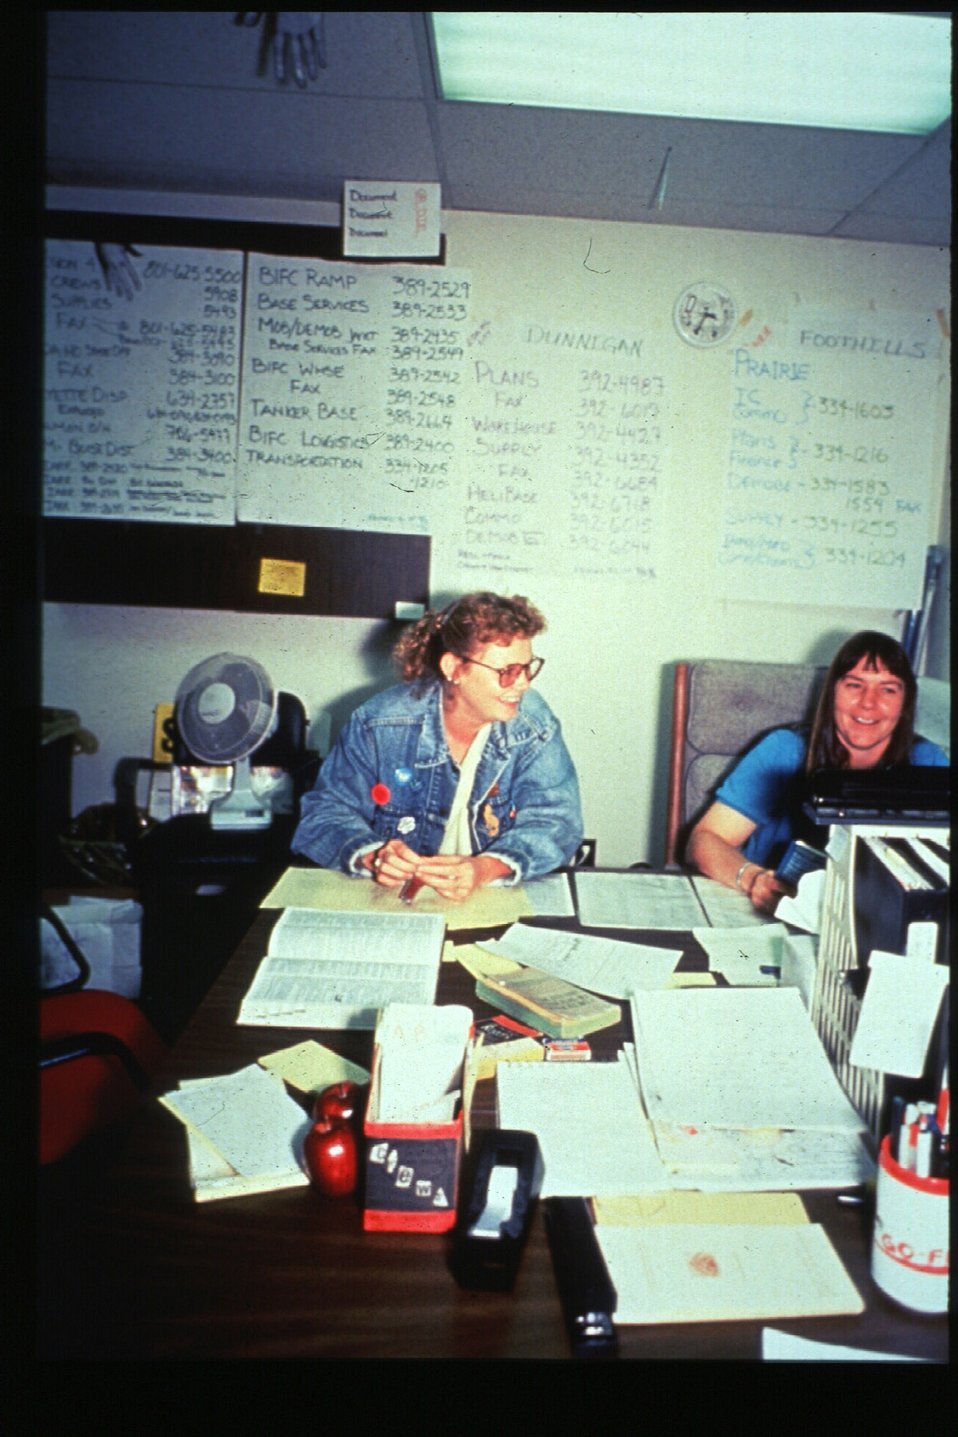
Boise Foothills Fire Danskin Mountains and South Fork of Boise River Office Four River Field Office LSRD Lower Snake River District